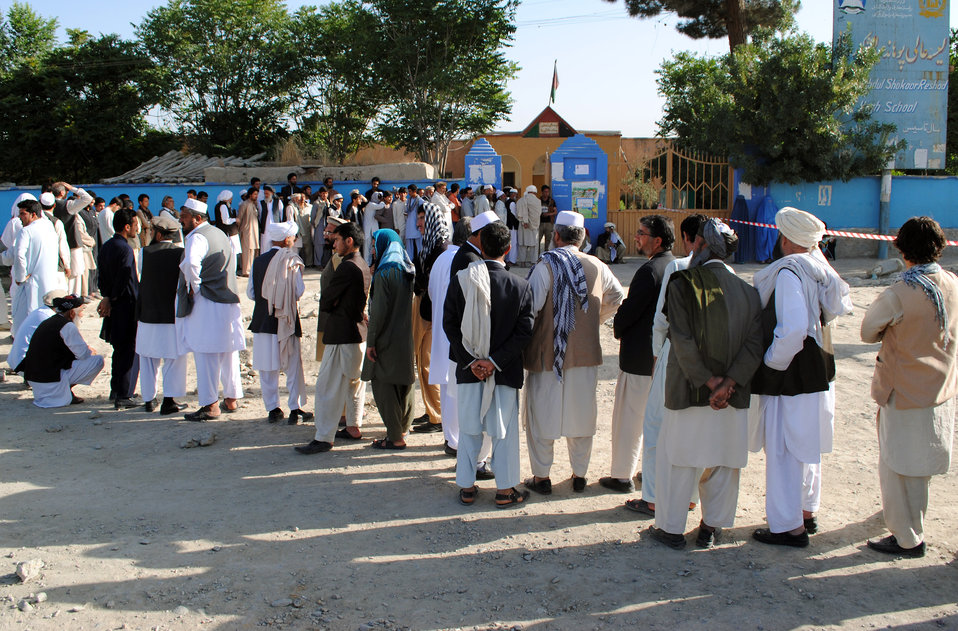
Voters line up in front of a polling station in Bagrami district of Kabul province.